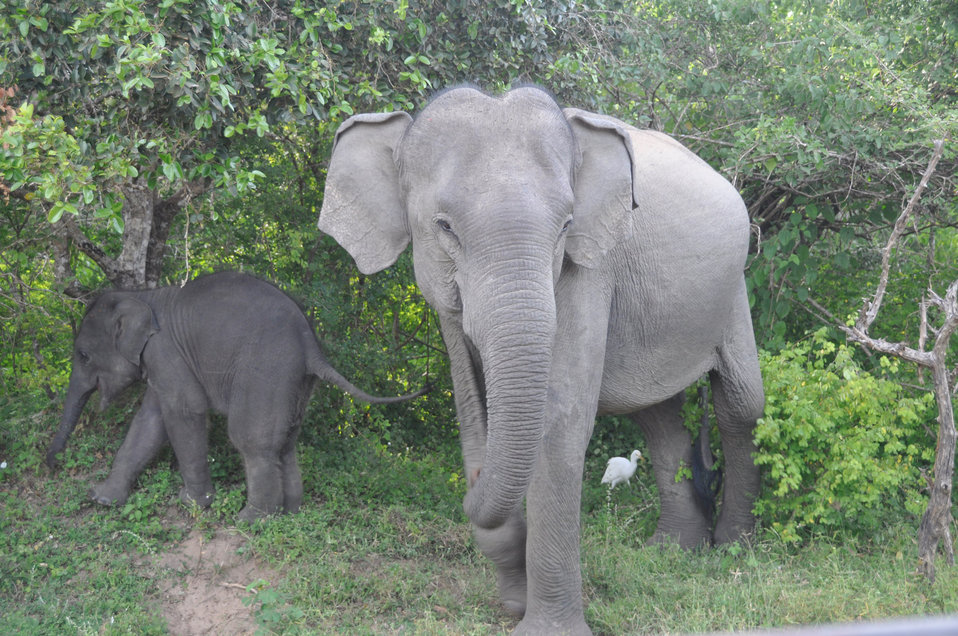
Elephants

Dissatisfied elephant with s baby elephant in the yala park reserve.